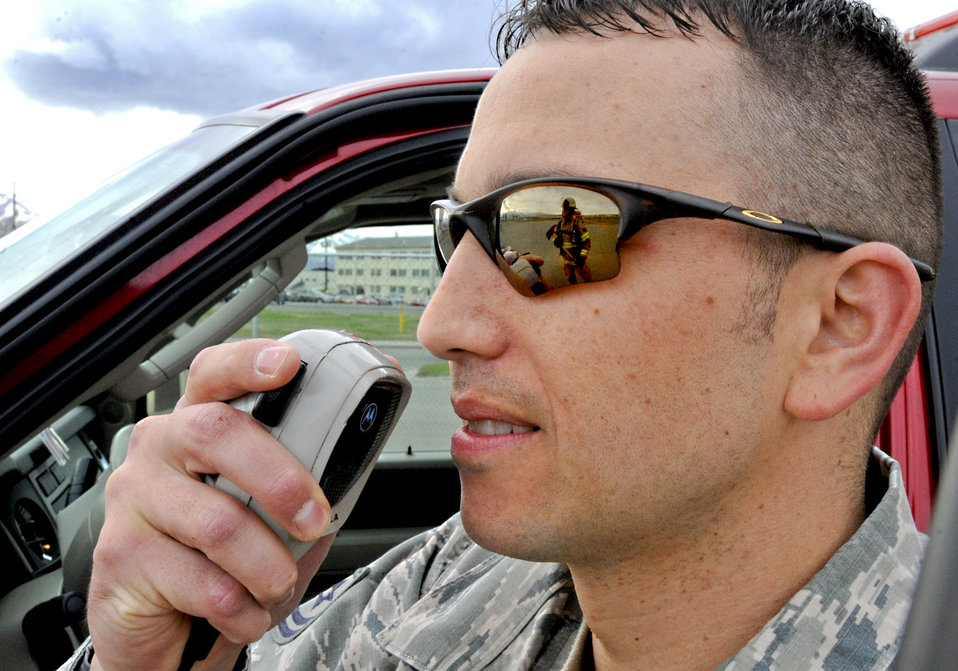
Fire Fighters

Tech. Sgt. Rikk Matteson gives instruction over the radio to fire protection team members during a daily training exercise May 13, 2010, at Elmendorf Air Force Base, Alaska. Sergeant Matteson is the 3rd Civil Engineer Squadron A shift battalion chief.